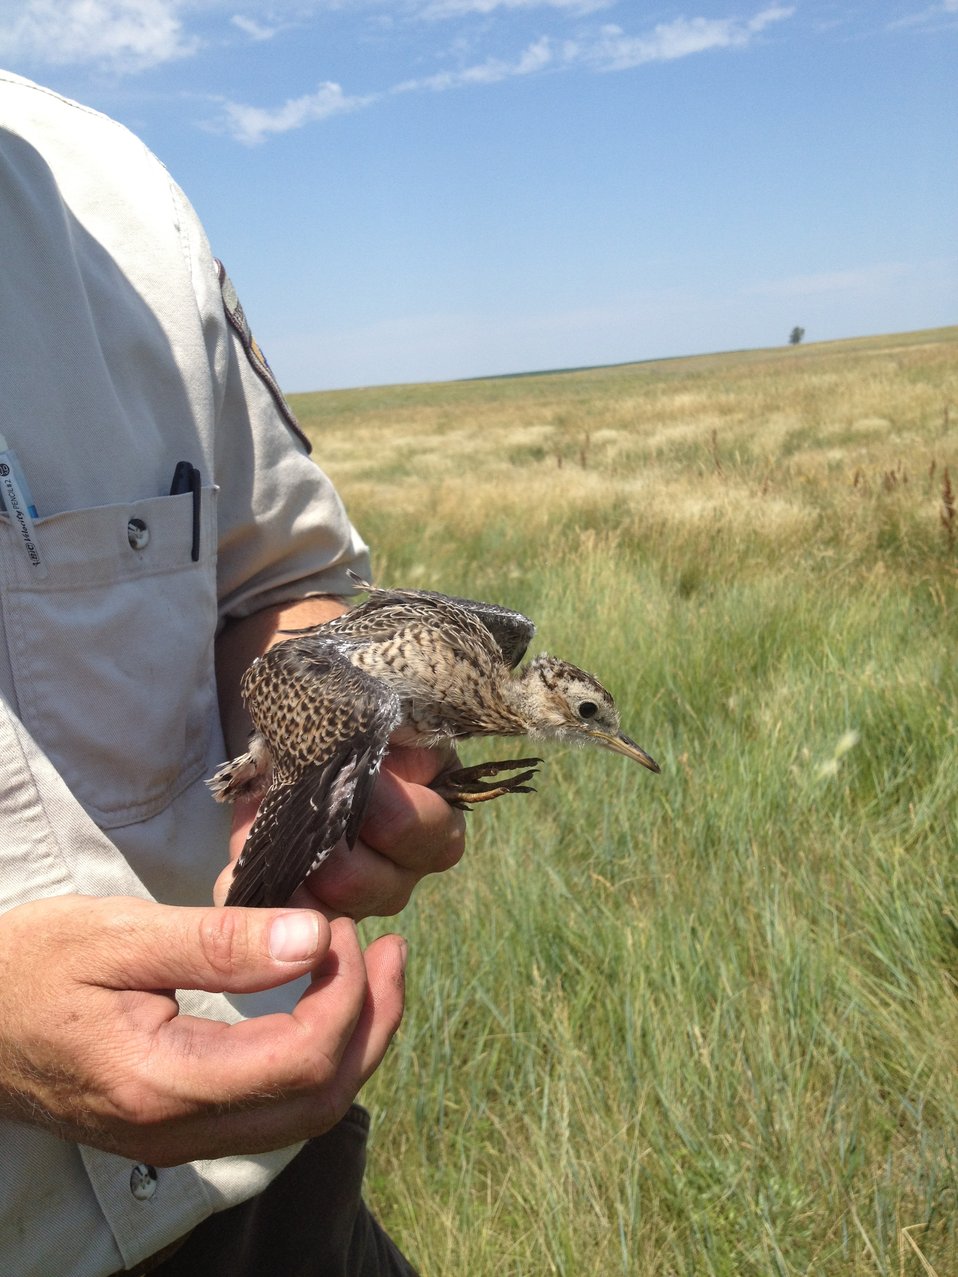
WPA WILDLIFE

Baby Upland Sandpiper